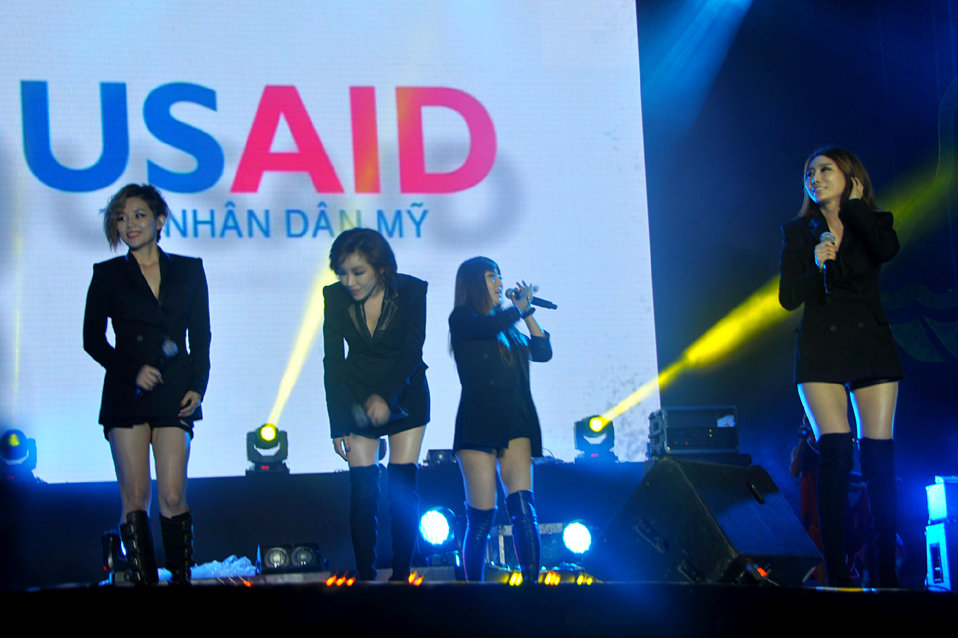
Korean Pop Group Brown Eyed Girls perform at MTV EXIT concert in Hanoi